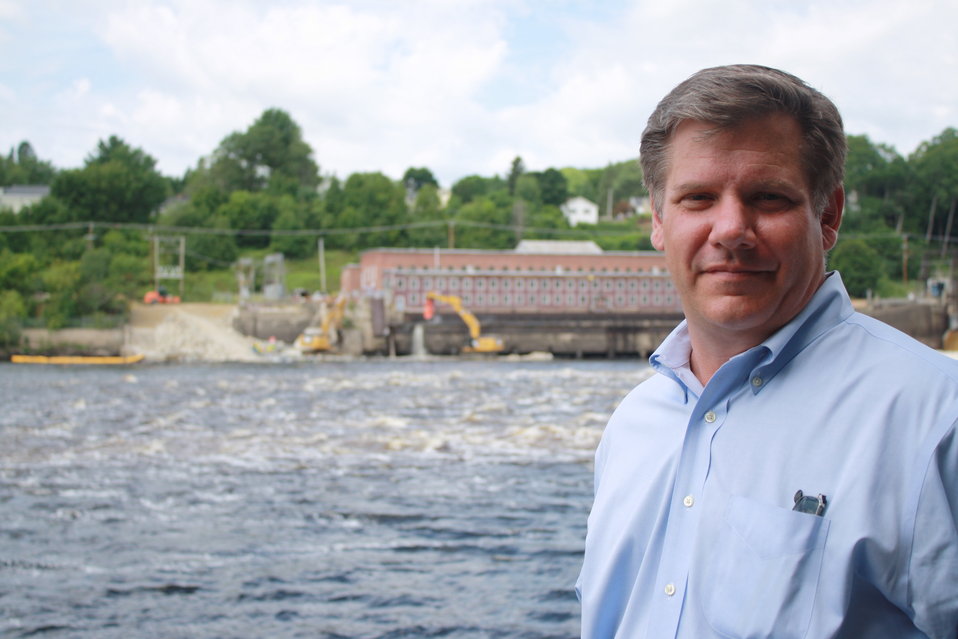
Veazie Dam Removal

David Hoskins, U.S. Fish and Wildlife Service Assistant Director for Fisheries and Aquatic Conservation, in front of the Veazie Dam breach.